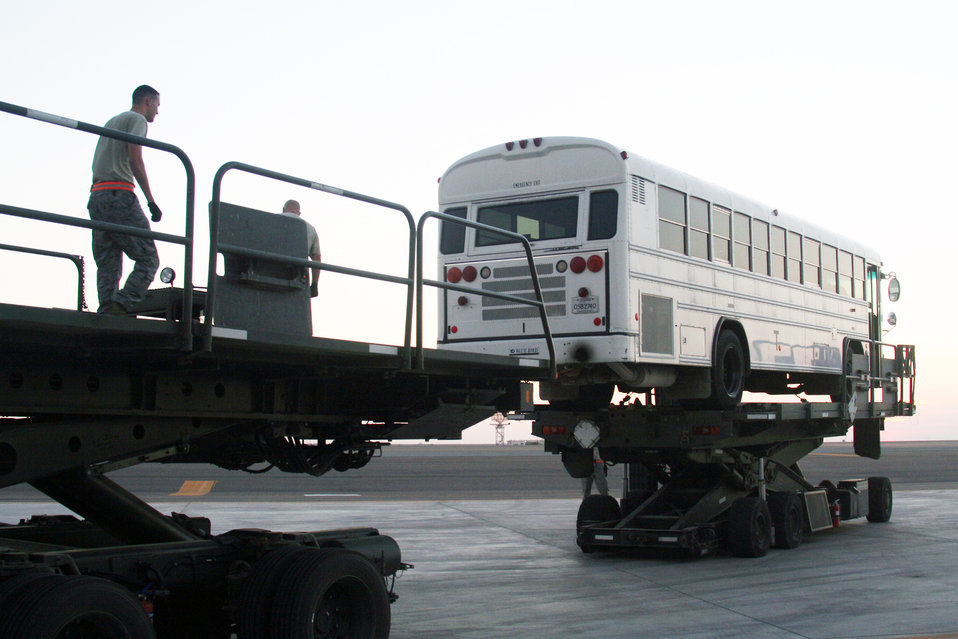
Aerial porters load American buses on Russian-made transport

Air transportation Airmen load a 44-passenger bus onto a Russian-built IL-76 transport plane during operations Dec. 30, 2009, at an air base in Southwest Asia. The bus was one of two that were loaded on the IL-76 for transport to Afghanistan. The Airmen are assigned to the 380th Expeditionary Logistics Readiness Squadron.